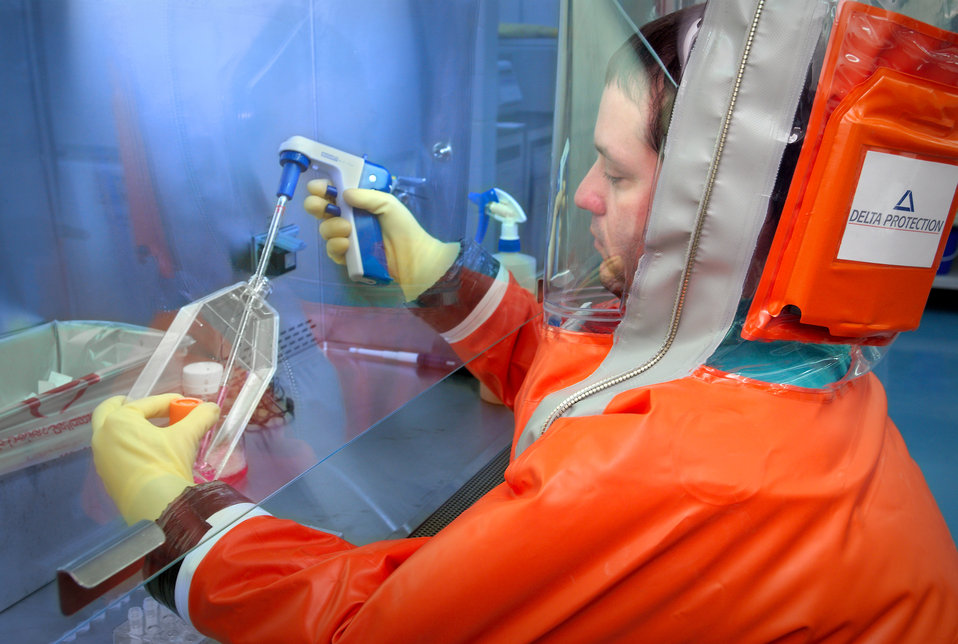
In this 2007 image, a Centers for Disease Control (CDC) microbiologist, and Special Pathogens Branch staff member, could be seen manipulating a flask of cells, from which he was pipetting a sample, which would be used in experiments with live viruses. This laboratorian was working within the confines of an enclosed flow hood, within which was created a negatively-pressurized environment, thereby, drawing laboratory room air back into the hood, rather than allowing air from within the hood to re-enter the laboratory area. Note that he was wearing an air-tight, self-contained, positively-pressurized suit, which kept him free of possible contamination while he carried out his experiments.